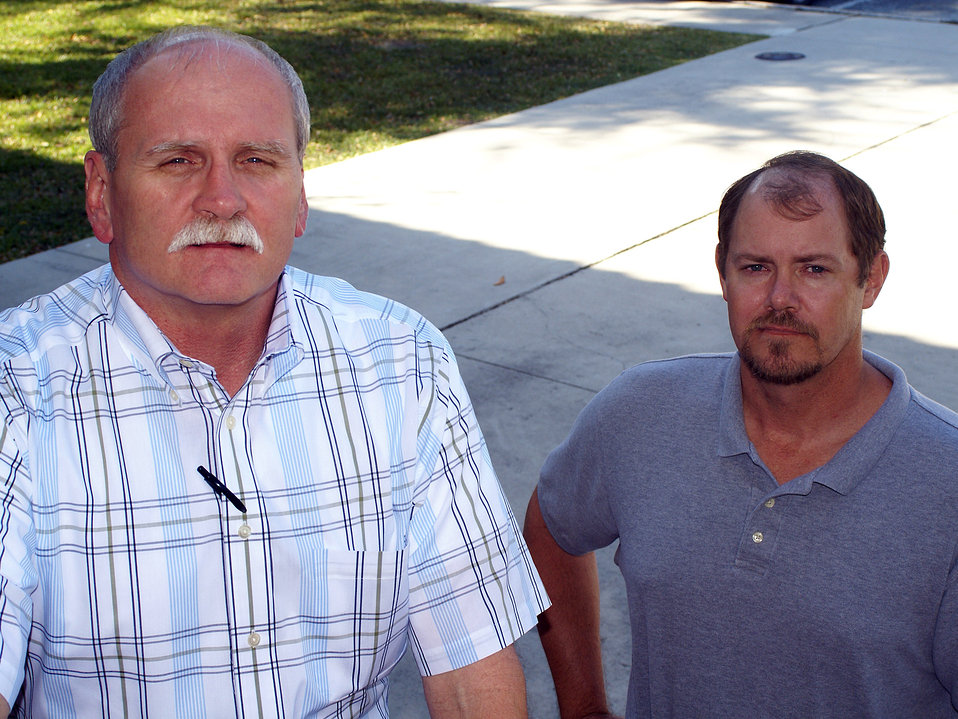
Air Force 'chatters' save Airman

Contracted AirForce.com online advisers, Max Sellers (left) and Craig Black, acted quickly to help a distraught Airman from potentially harming herself, and directed the right resources to get her help. Both advisers are retired Air Force recruiters with 23 years of active-duty recruiting experience between them.